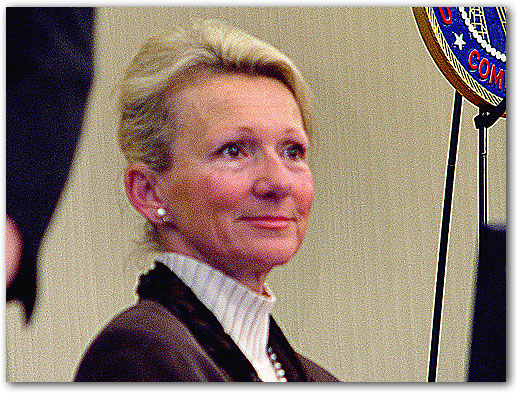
FCC Commissioner Deborah Tate.